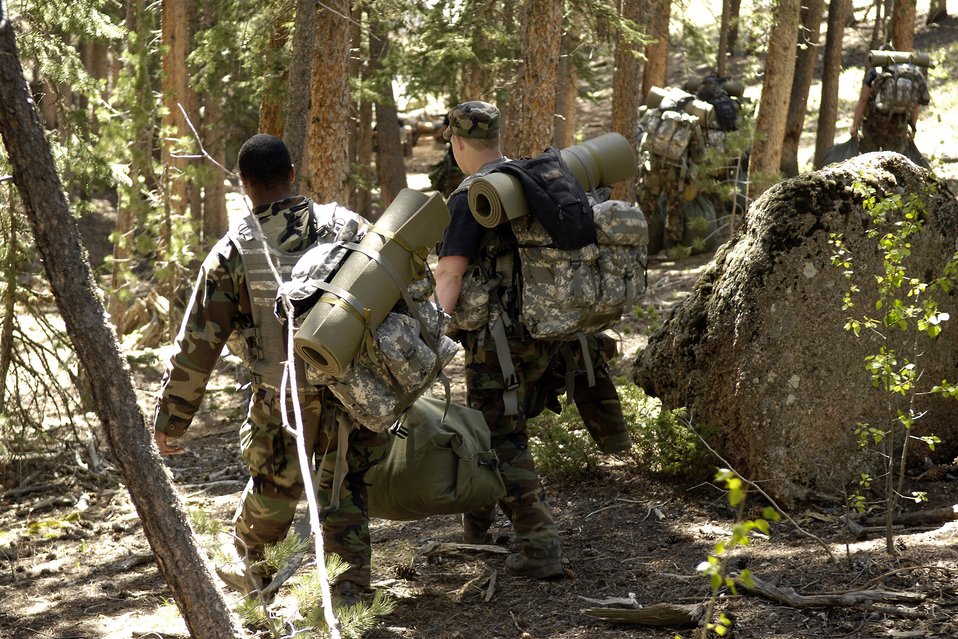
Cadets train in survival, evasion, resistance, escape

Air Force Academy cadets enter a wooded area June 9, where they will set up camp in Saylor Park, Colo. More than 600 cadets are being trained as instructors in survival, evasion, resistance and escape tactics during the 2008 summer period.